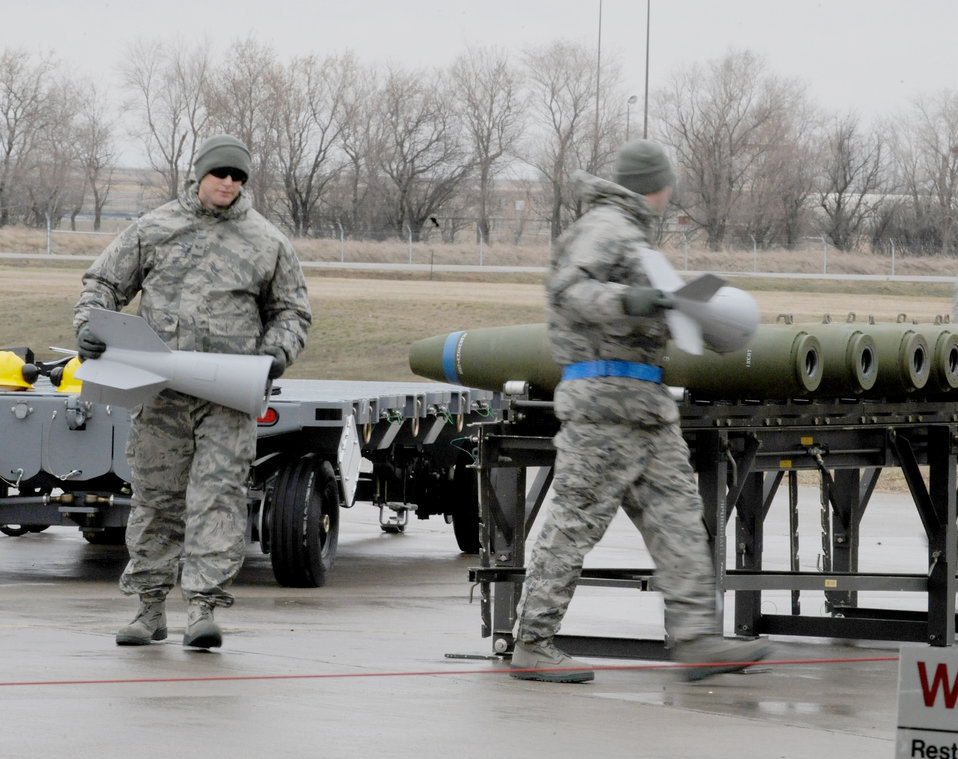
Global Strike Challenge

Load crew members attach fins to conventional bombs April 13, 2010, in a load crew competition at Minot Air Force Base, N.D. The 5th Bomb Wing joined six other bomb wings in Air Force Global Strike Command's first load competition here April 13 through 14. The evaluation was based not only on the Airmen's hands-on skills, but also on their knowledge in their respective career fields.